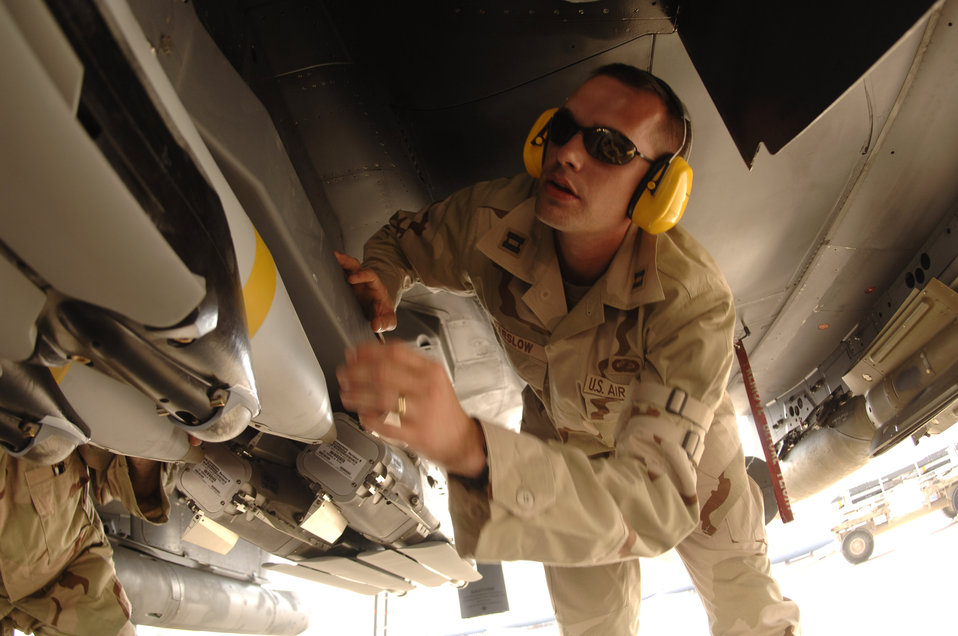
Small diameter bomb makes combat debut

Capt. Jim Parslow, Small Diameter Bomb Systems Flight commander, inspects a weapons carriage with GBU-39/B small diameter bombs mounted on an F-15E Strike Eagle. Captain Parslow is deployed to a forward-operating location from the Air Armament Center at Eglin Air Force Base, Fla., to support the fielding of the SDB and to ensure a smooth transition from the weapon testing to combat operations.